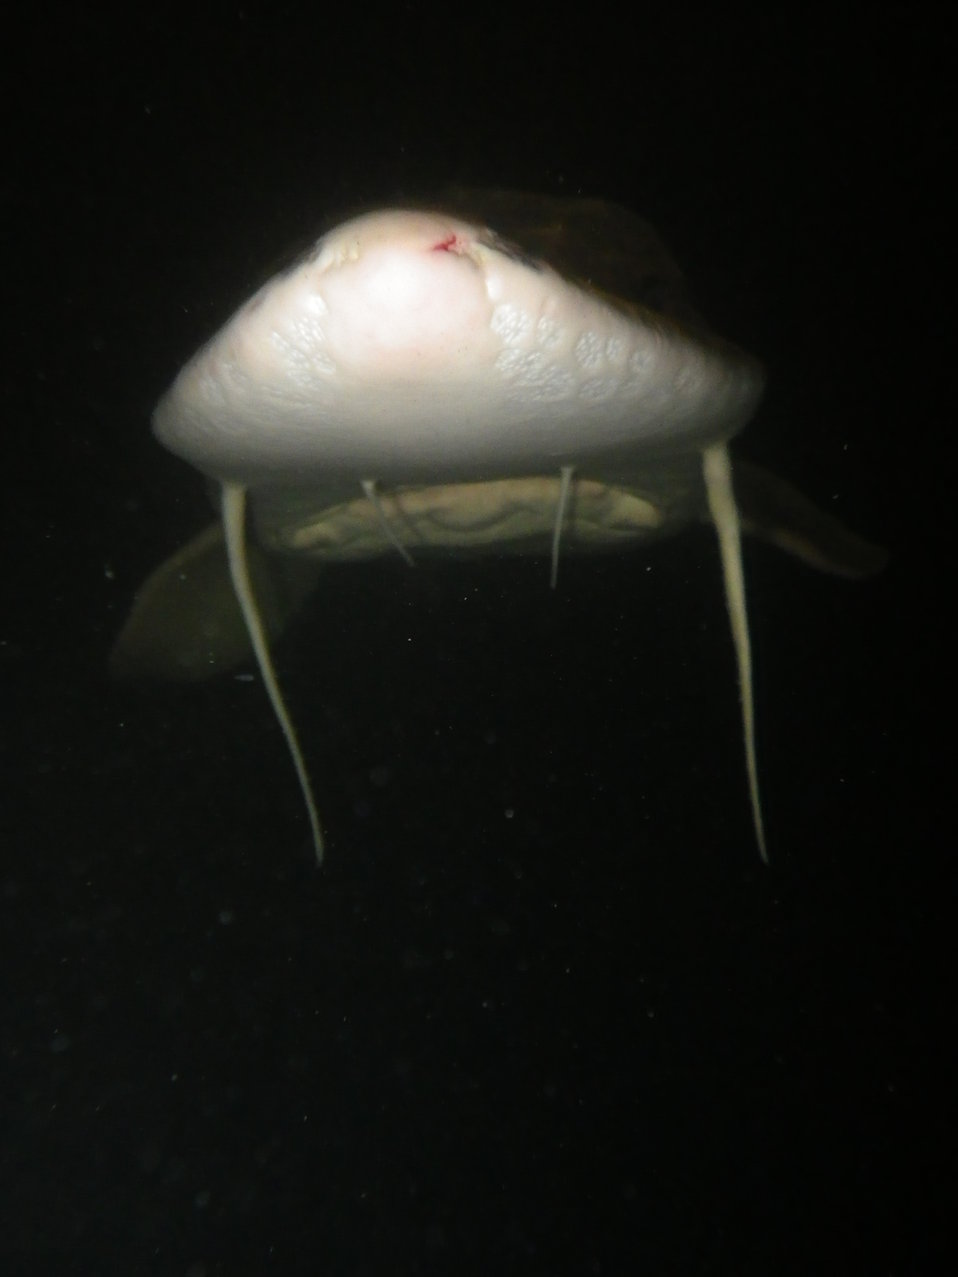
Pallid Sturgeon - Barbel View

The prehistoric pallid sturgeon is recognizable from his shovelnose cousin from the length of the barbels. This adult pallid sturgeon is displaying his 'saber-toothed' barbels for the photographer.

Location: Garrison Dam NFH

Photo Credit: Rob Holm / USFWS

Photo Contest Entry #122